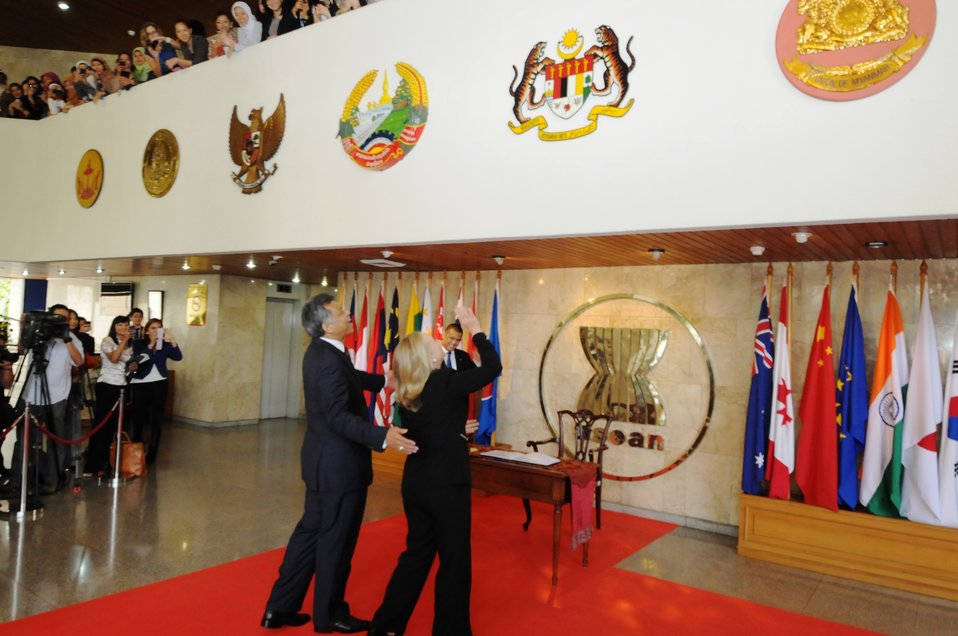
Secretary Clinton Waves to the Staff at the ASEAN Secretariat

U.S. Secretary of State Hillary Clinton waves to staff at the ASEAN Secretariat in Jakarta, Indonesia, September 4, 2012. Accompanying Secretary Clinton is ASEAN Secretary General Dr. Surin Pitsuwan.